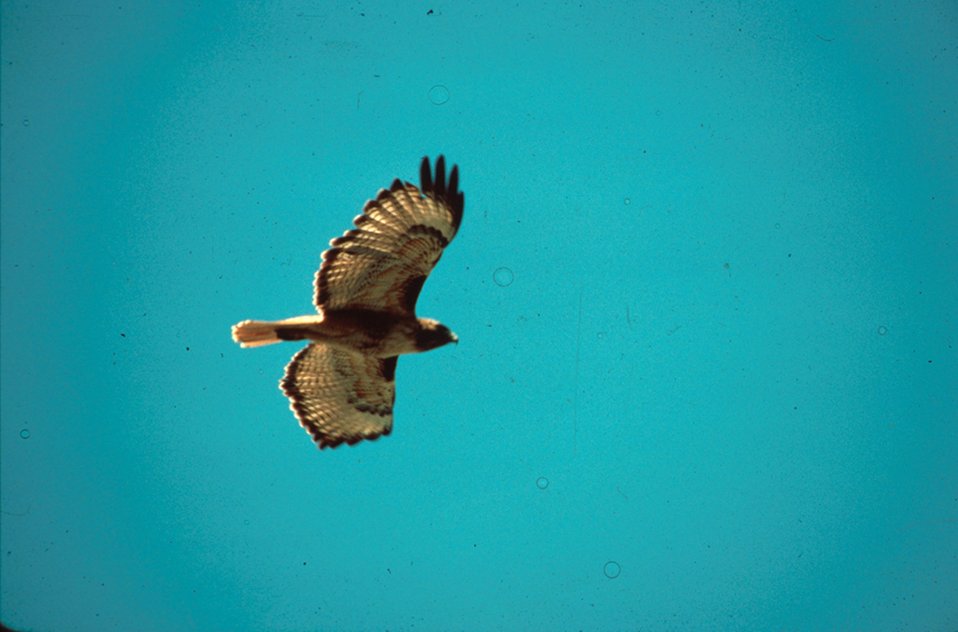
Red-tailed Hawk Owyhee Field Office LSRD Lower Snake River District